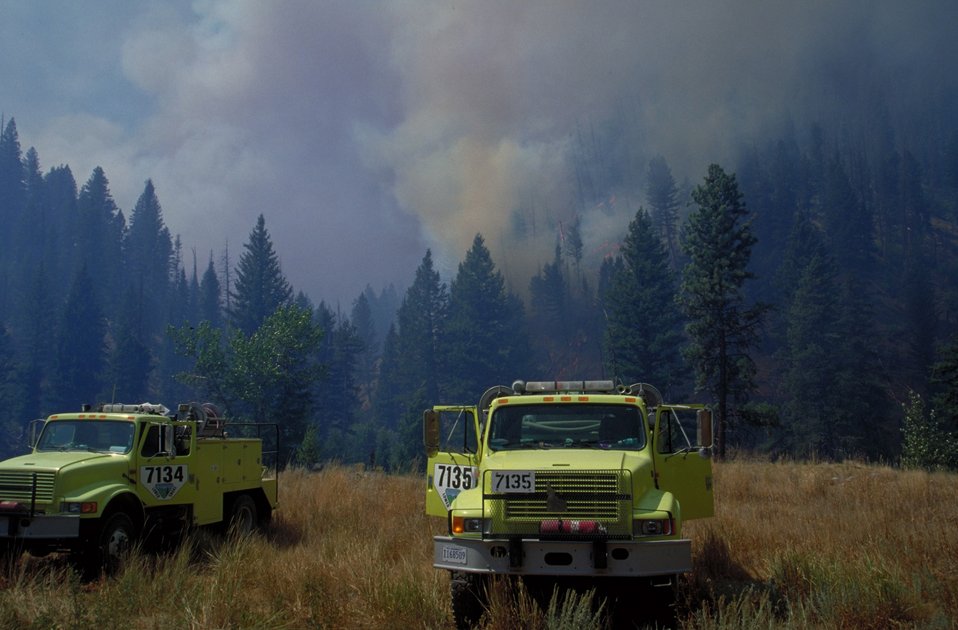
Smoke Heavy engine Fire Season 2000 Lower Snake River District LSRD